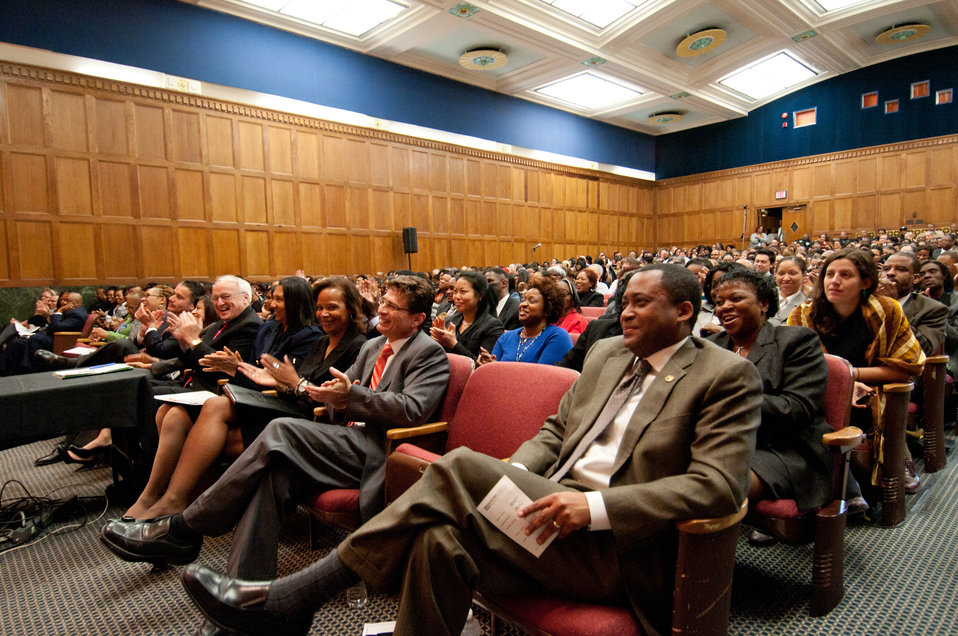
Agriculture Assistant Secretary for Civil Rights Dr. Joe Leonard (right) and an auditorium full of U.S. Department of Agriculture employees laughed, listened and learned of the Reverend Al Sharpton’s insights about the topic of “Civil Rights in the Age of Obama,” on Monday, February 28, 2011; in Washington, D.C.